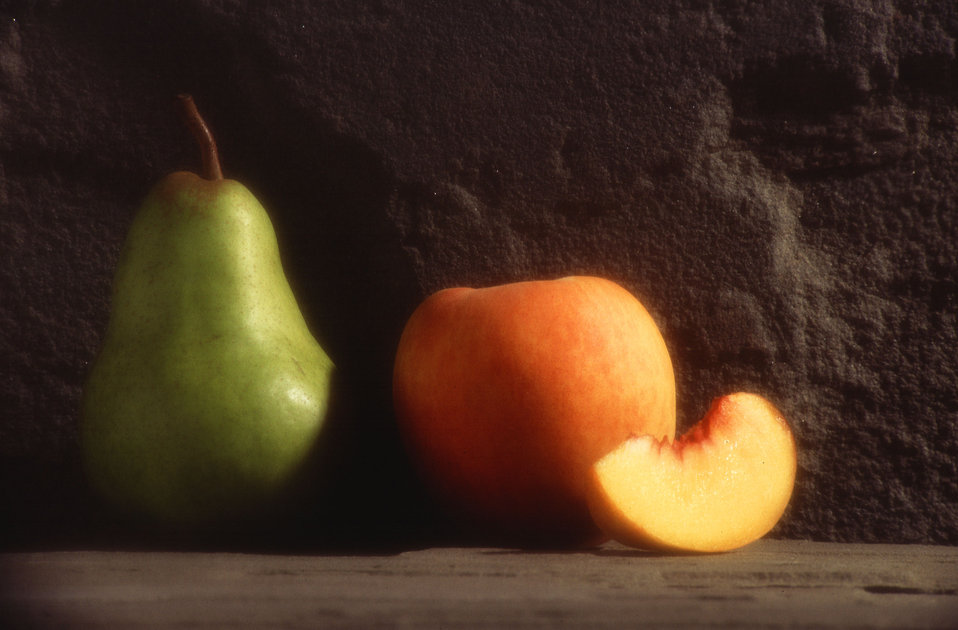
U.S. Department of Agriculture (USDA), Agriculture Research Service (ARS) researchers at Kearneysville, WV has released peach varieties that reliably produce sunny, juicy peaches in northerly climes. Look for them to do well despite the harsh winters of central Pennsylvania. Pear research has also borne fruit. Thanks to years of pest control studies, the fire blight and pear psylla problems that long ago wiped out the U.S. East Coast pear industry have yielded to a variety of new controls. USDA ARS has even come up with computer programs to help growers predict when fire blight will strike, so they can be ready for it. The program, which has been tested in over 20 locations throughout the U.S. and Canada, has resulted in better fire blight control and has reduced the number of sprayings that orchards receive.